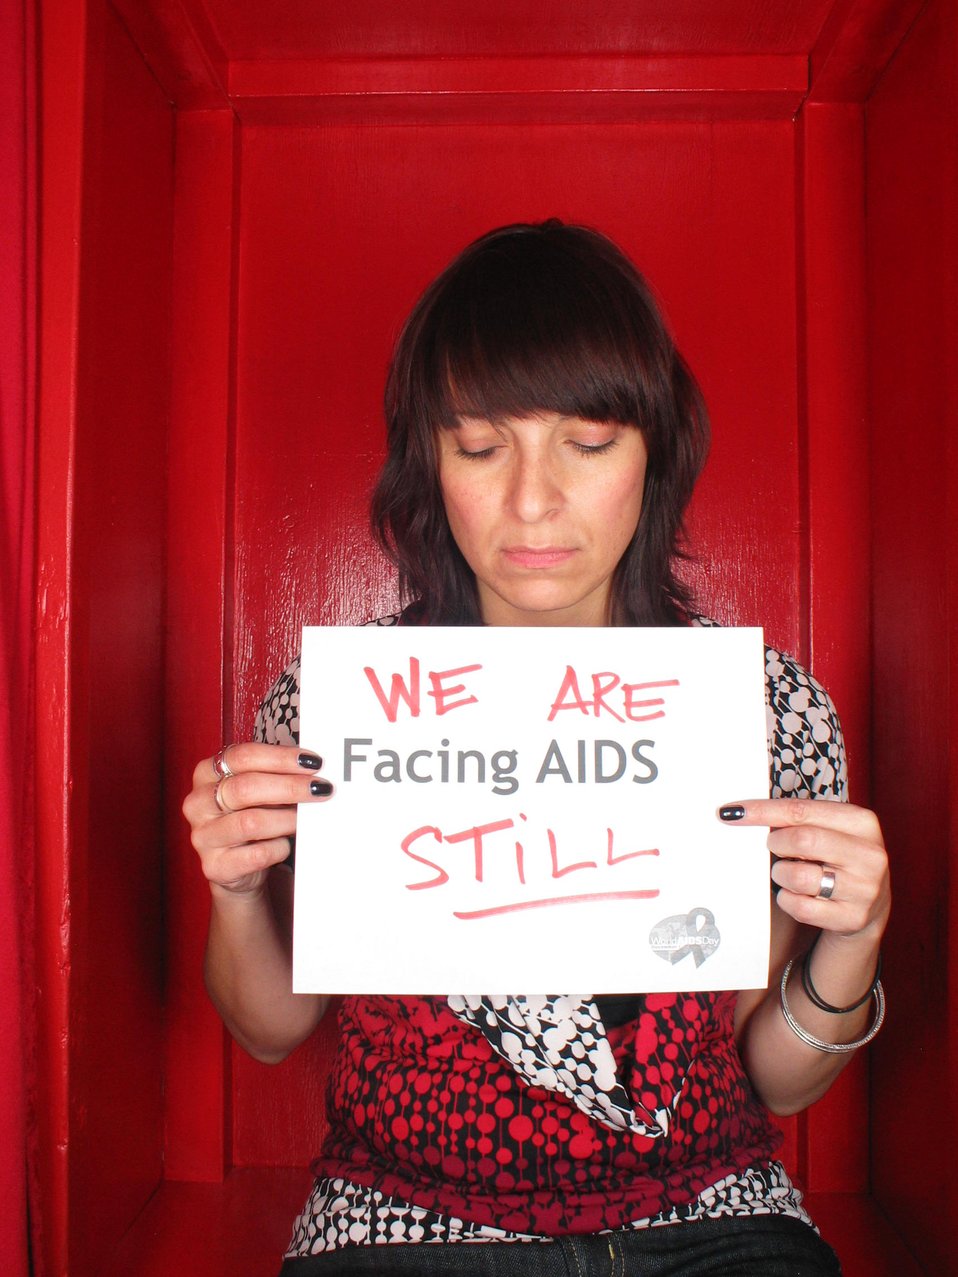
We are Facing AIDS still